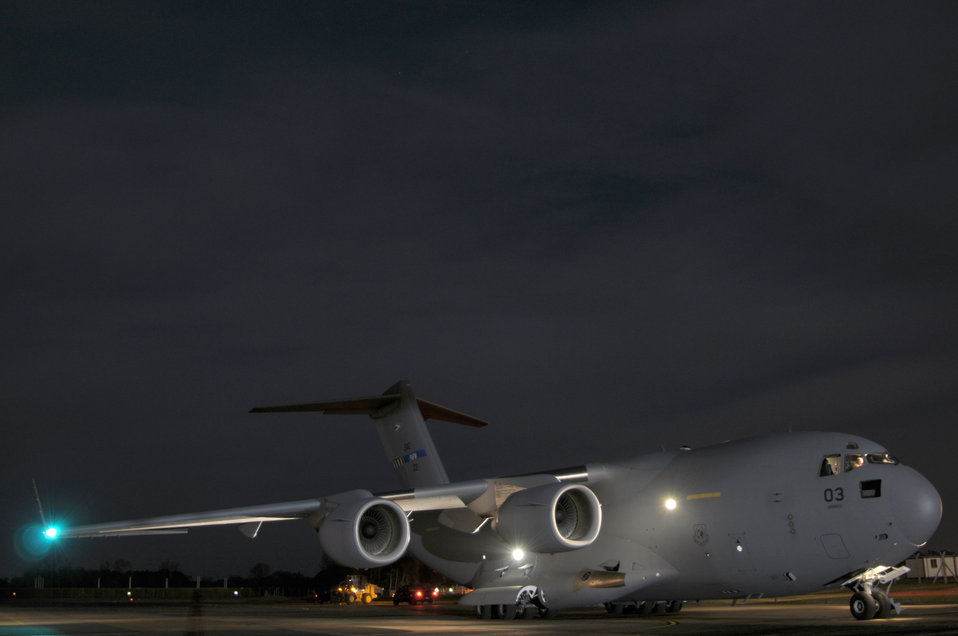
Operation Odyssey Dawn

The first C-17 Globemaster III sending 48th Fighter Wing personnel for in support of Operation Odyssey Dawn on Royal Air Force Lakenheath, England, March 19, 2011. Members of the 48th Fighter Wing were recently notified that they would be supporting efforts in Operation Odyssey Dawn. The 48th FW provides all-weather, day or night air superiority and air-to-ground precision combat capability as well as combat search and rescue capabilities.